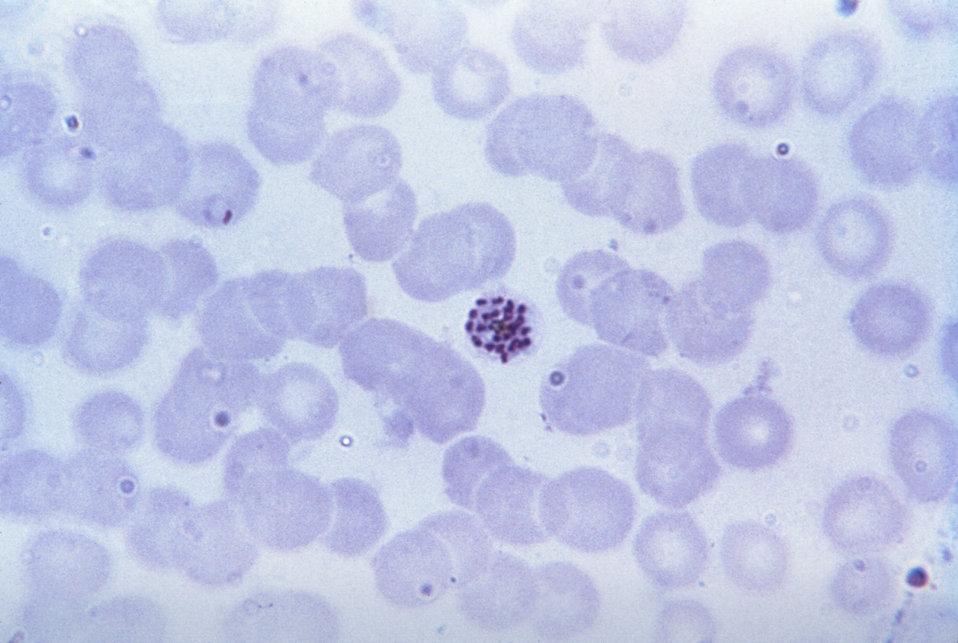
This thin film Giemsa stained micrograph reveals intermediate-forms, as well as a mature Plasmodium falciparum schizont.